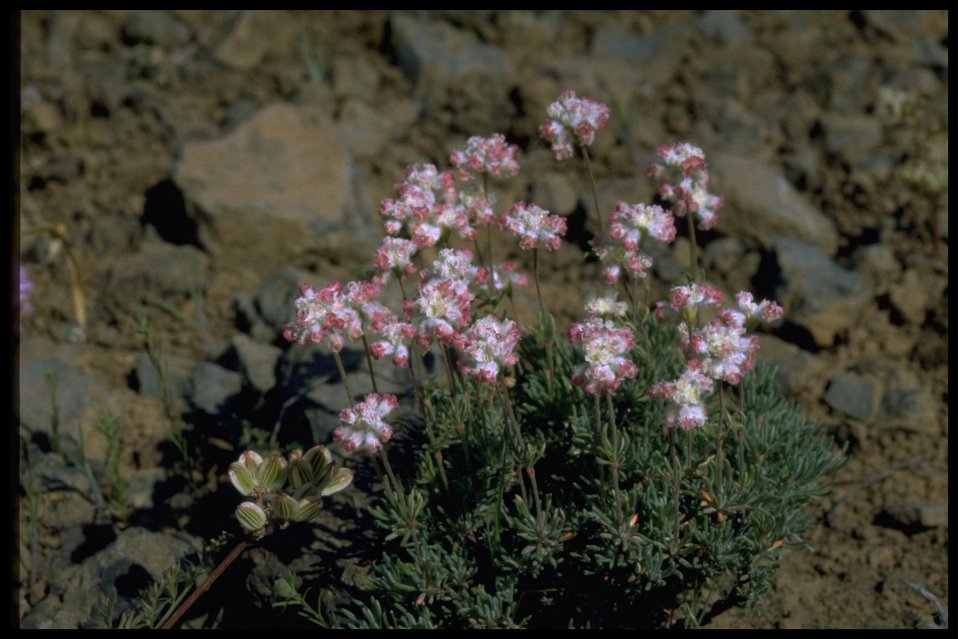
Medium shot of Thyme-leaved buckwheat wildflowers, whole plant.